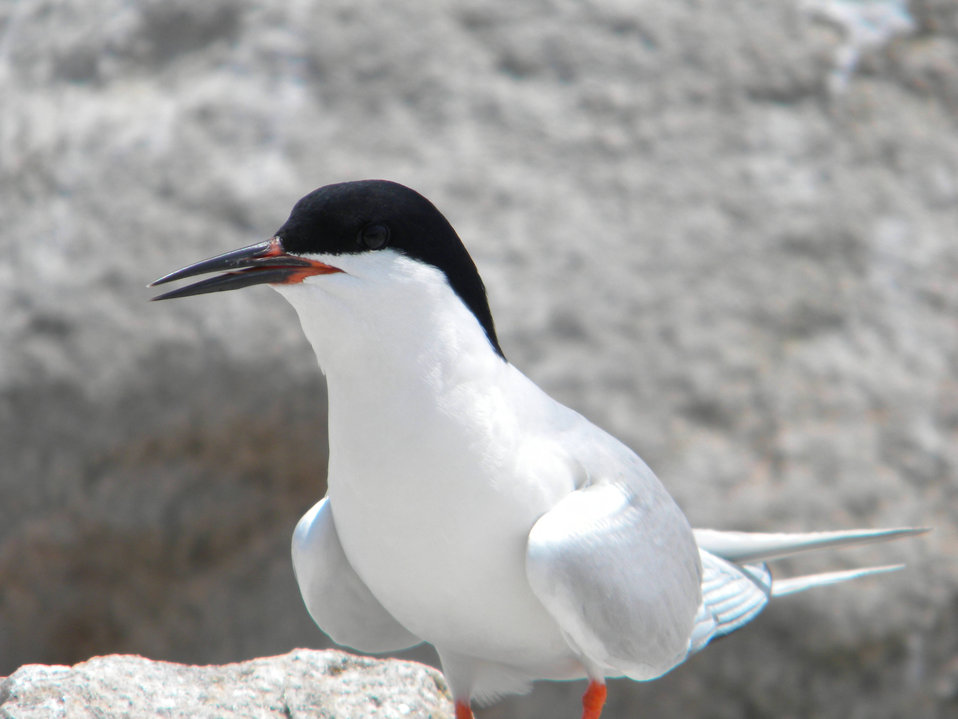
Roseate tern at Amagansett National Wildlife Refuge.